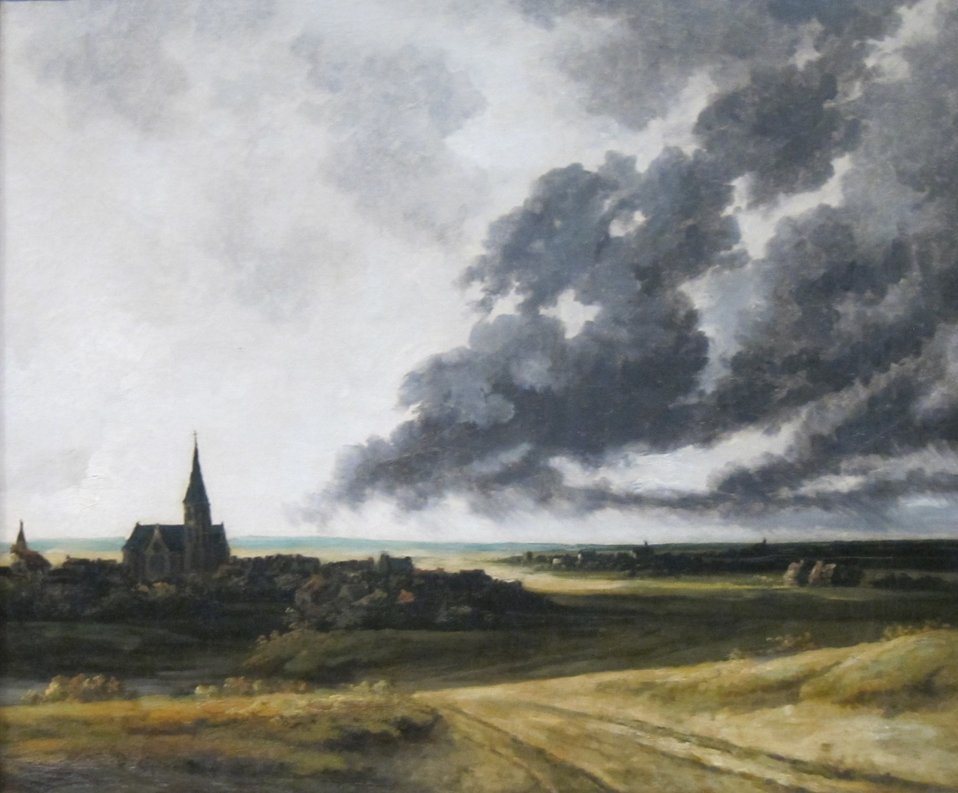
Landscape, oil on canvas painting by Georges Michel, c. 1840, Dayton Art Institute